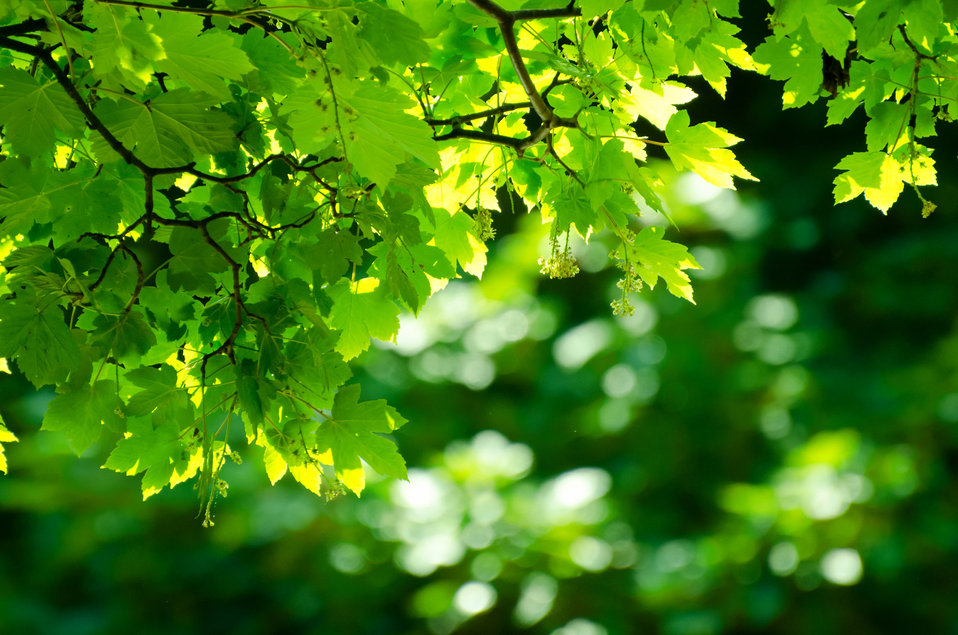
Green leaves -nature.